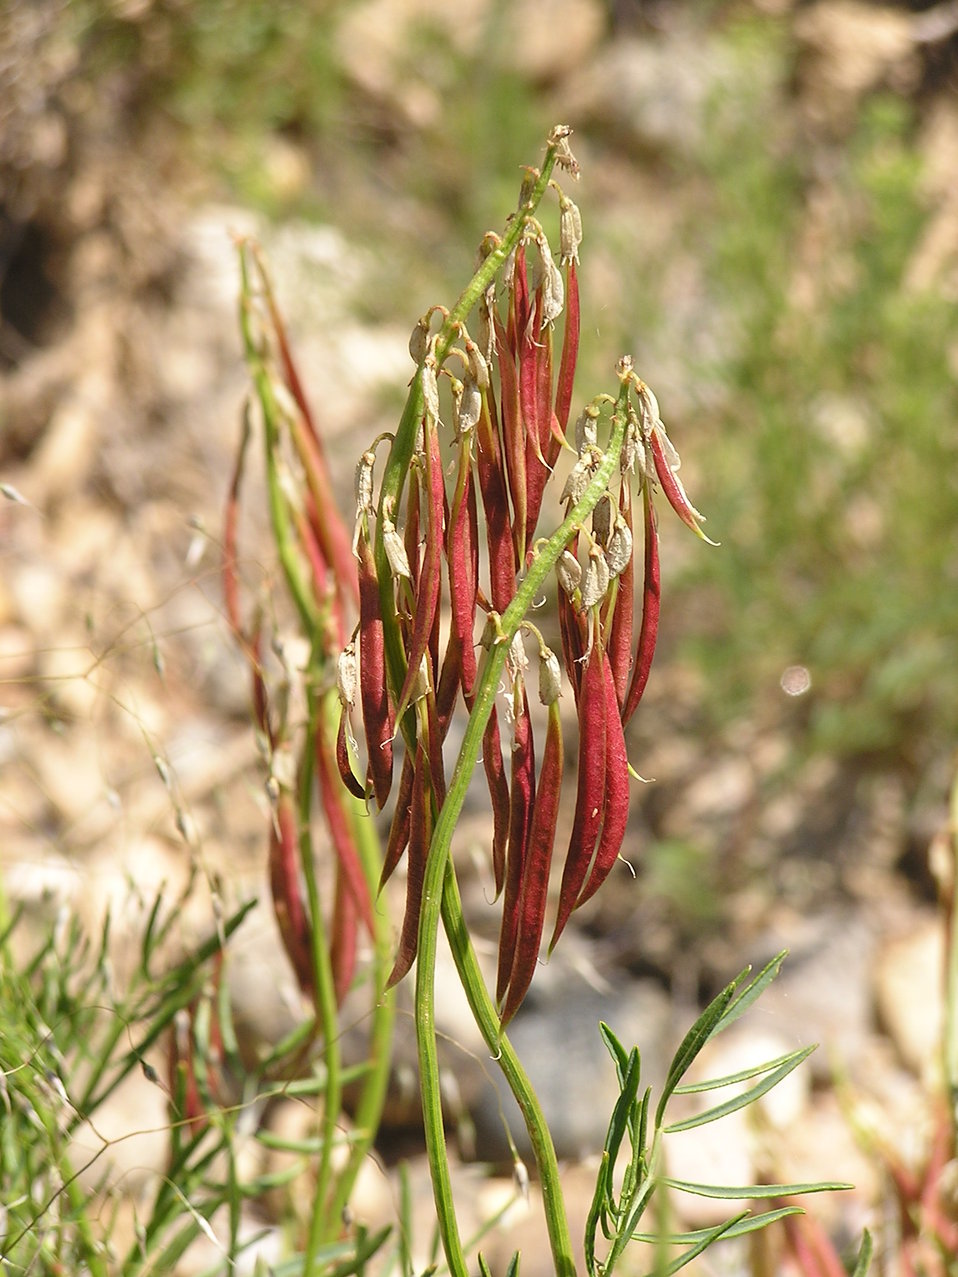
Kremmling Osterhout milkvetch

The Kremmling Osterhout milkvetch is a non-woody (herbaceous) plant species in the pea family (Fabaceae). It has many slender and erect stems that grow to, on average, 12 to 40 inchestall. Its leaves are made up of many narrow leaflets, each up to 1 1/2 inches long. In summer, the Kremmling Osterhout milkvetch’s creamy white flowers bloom, hang-ing along the end of each flowering stalk. In fall, its long, green fruits often turn maroon red when mature. Though distinctive, the Kremmling Osterhout milkvetch may be confused with other milkvetch species in the area.